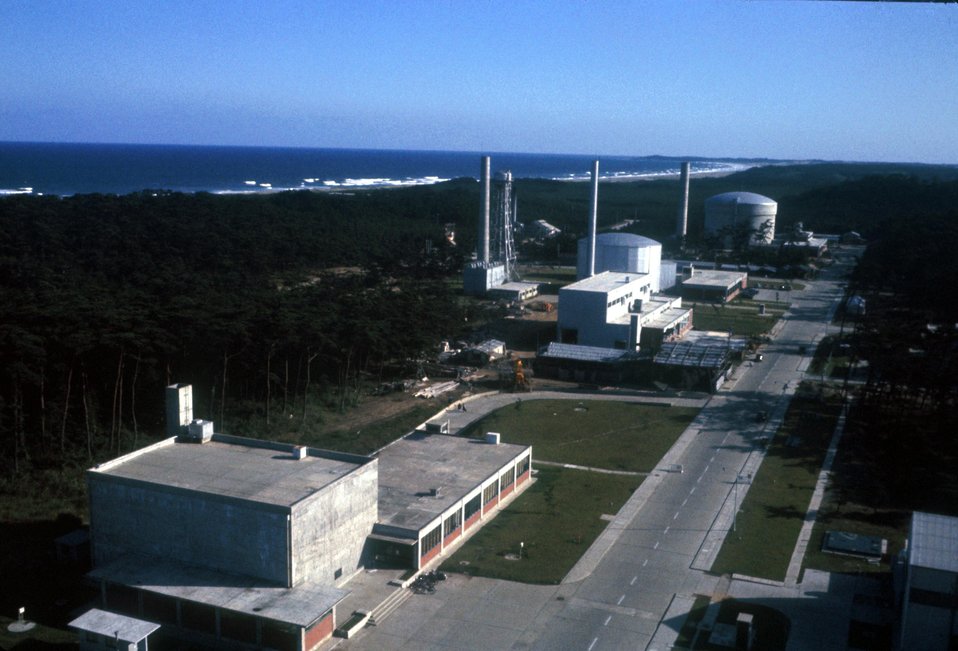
Japan Atomic Energy Res. Inst. JRR-1(1957), JRR-2 (1960) & JRR-3 (1962).